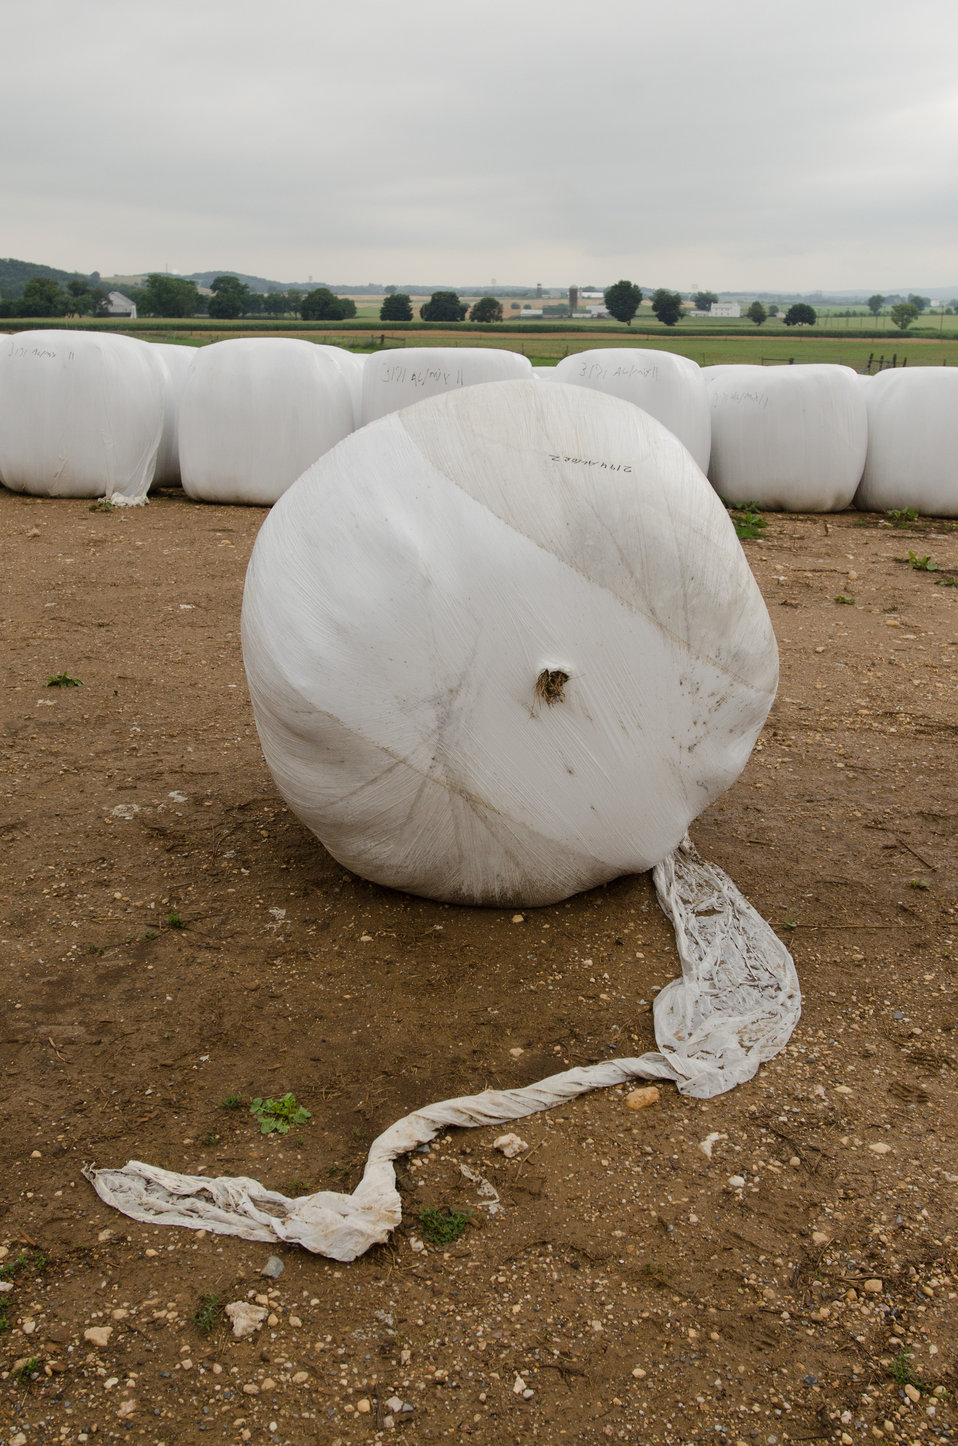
White plastic wrapped bales of pasture grass and alfalfa have been fermenting for months to create sweet silage that stores well and can be used to feed cattle at varying amount all year long at Nick’s Organic Farm is owned by Nick Maravell in Adamstown, MD on Friday, July 12, 2013. The fermentation process improves the taste and increases the vitamin levels in it. The farm produces Black Angus beef, chicken, turkey, eggs, hay, soybeans, corn, alfalfa, orchard grass, rye; and other crops. The cattle are 100% grass-fed receiving certified organic pasture, certified organic hay (in winter), water and mineral salts mixed with sea kelp. The cattle are not fed hormones, antibiotics or animal products. Poultry feed from grain is ground from organic grain. The poultry also graze on organic pastures. The farm has conducted on-farm research with federal, state and non-profit agencies to refine organic practices. An organization such as the U.S. Department of Agriculture (USDA) Agricultural Research Service (ARS) center in Beltsville has been able to conduct research to improve organic crops and to breed and manage the cattle so that they have.